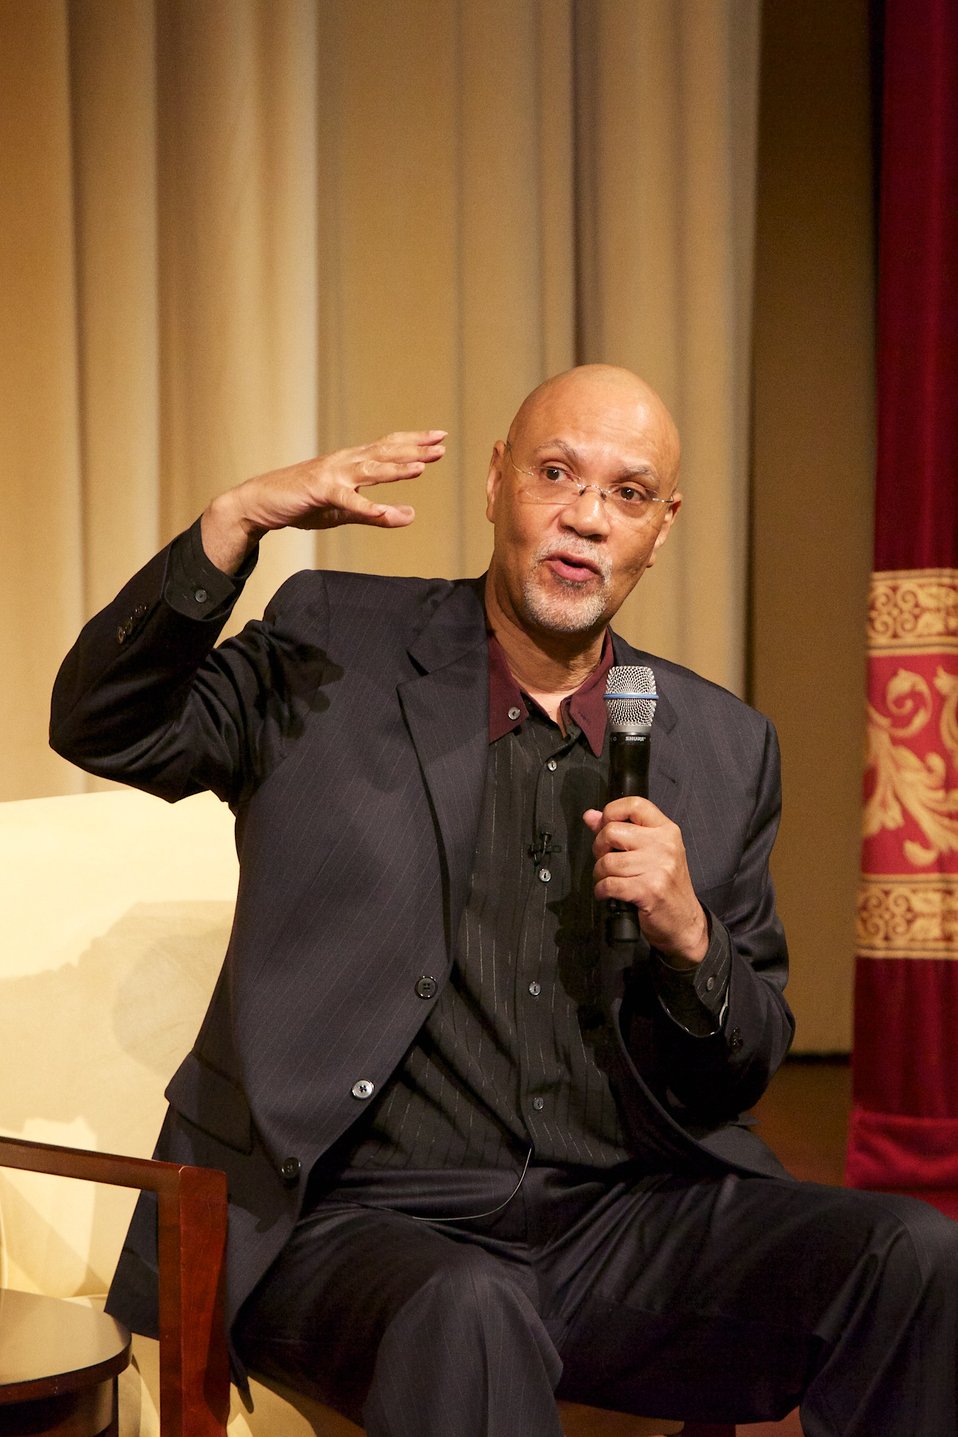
Solomon Northup's Odyssey